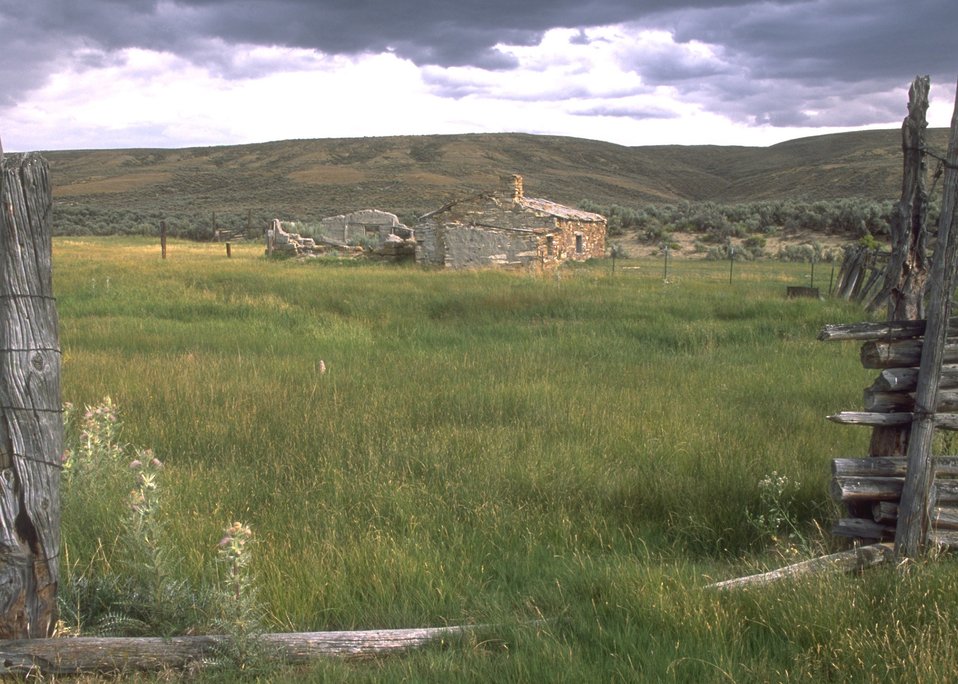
Historic Crookston Ranch near OHV Sand Dunes Area, Rock Springs Field Office.